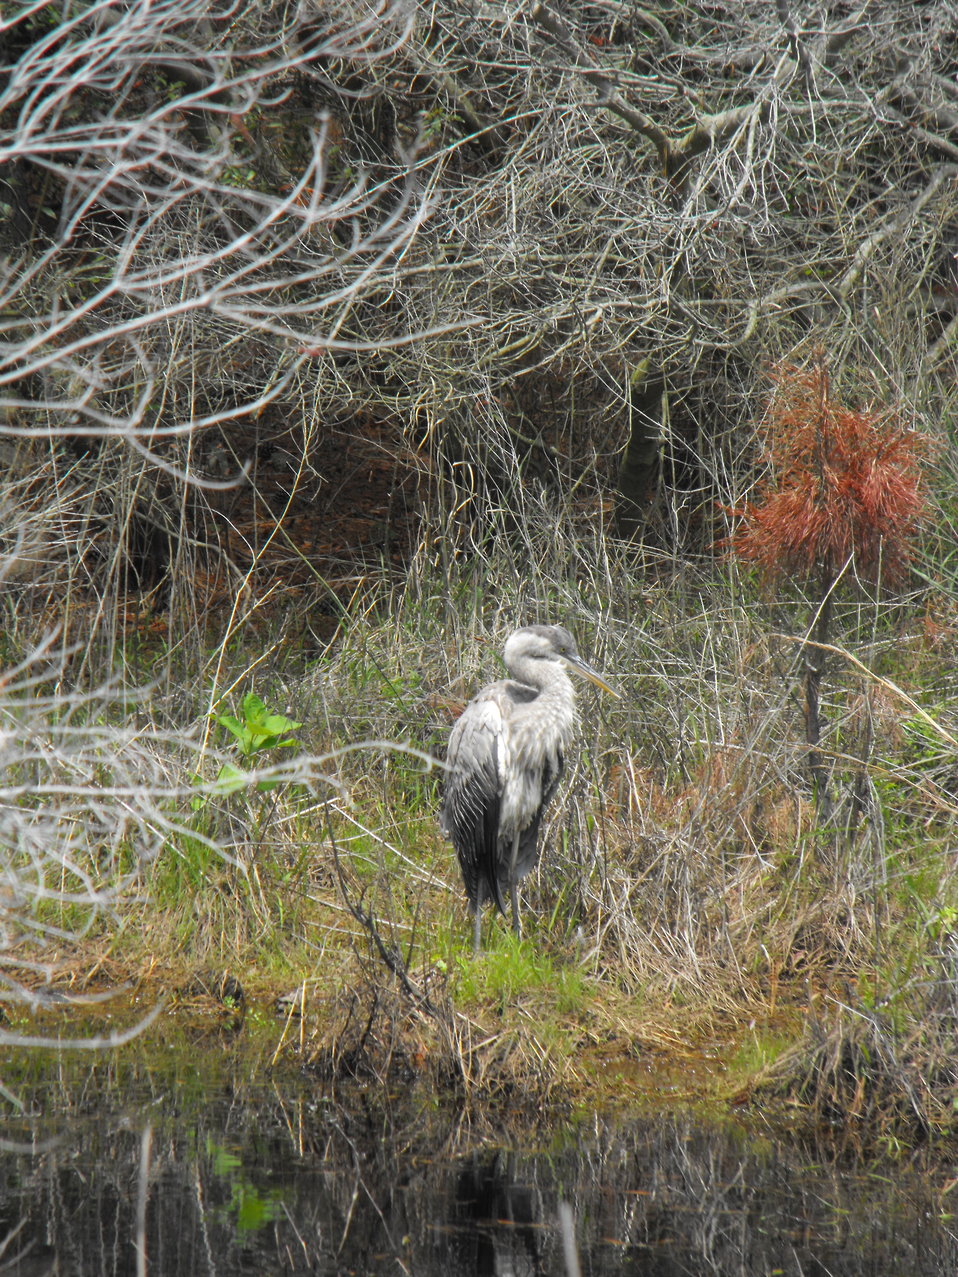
Great blue heron

A great blue heron at Chincoteague National Wildlife Refuge.